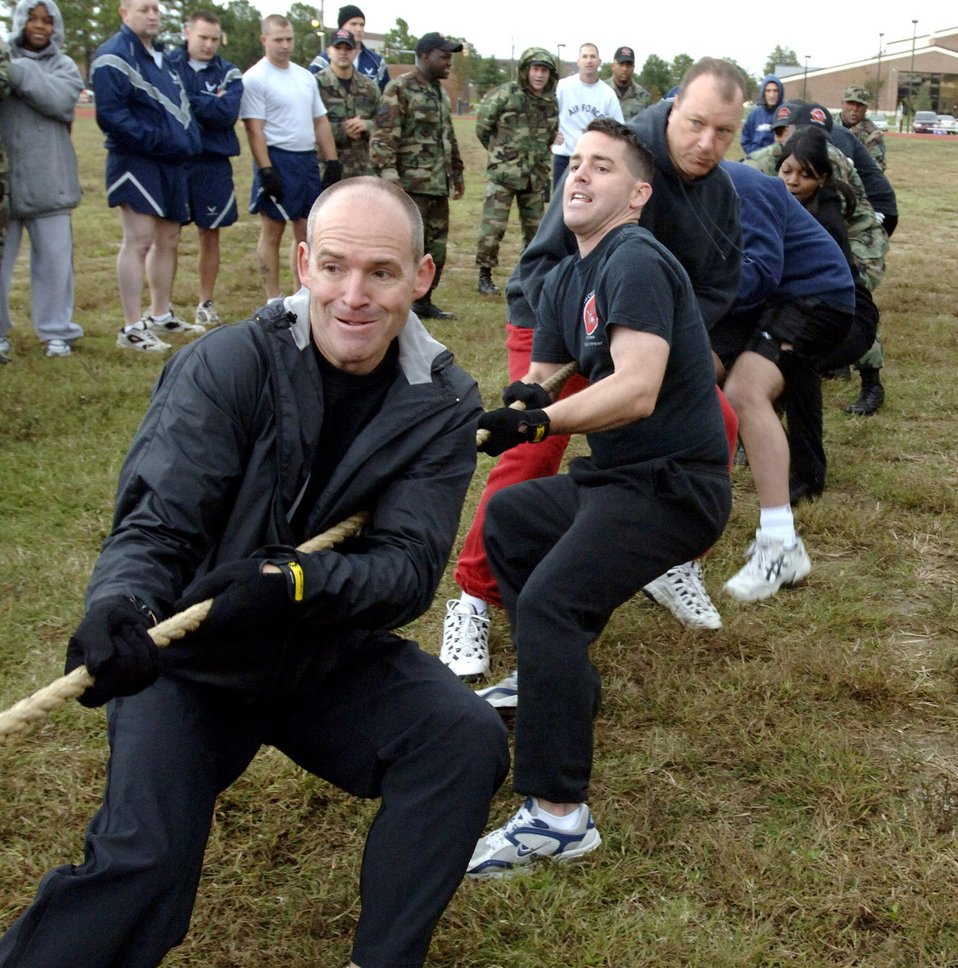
Fit to fight

LANGLEY AIR FORCE BASE, Va. (AFPN) -- Lt. Col. Gregory Perkinson (left) is followed by Capt. David Hern and Chief Master Sgt. Timothy Prentice during the tug-of-war competition here during the base fitness challenge. The 1st Mission Support Group held a challenge testing each squadron's abilities at push-ups, sit-ups, running and tug-of-war.